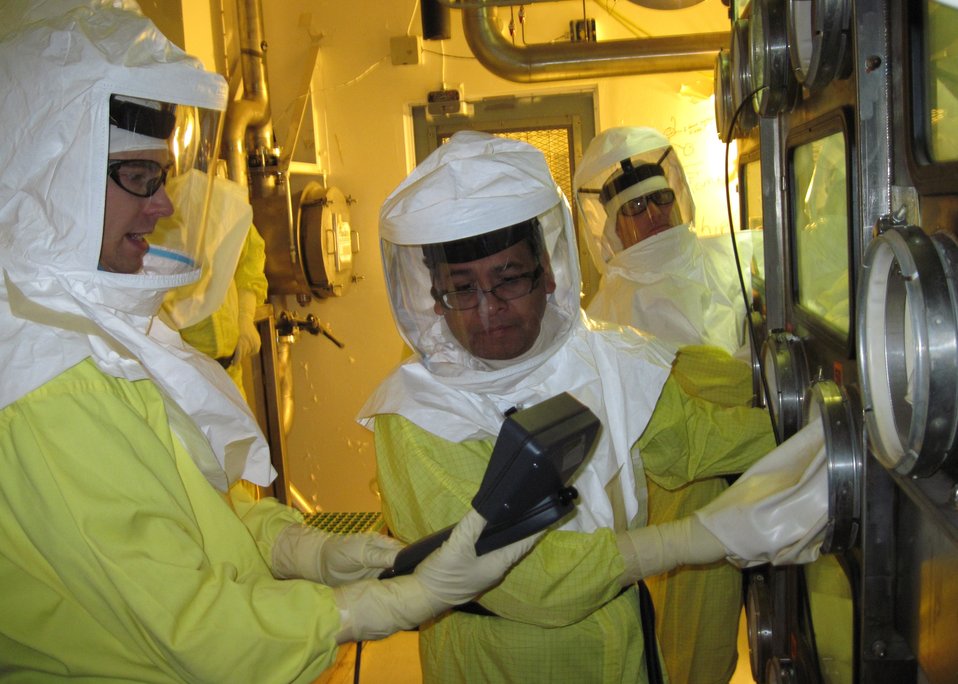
Recovery Act work at Hanford